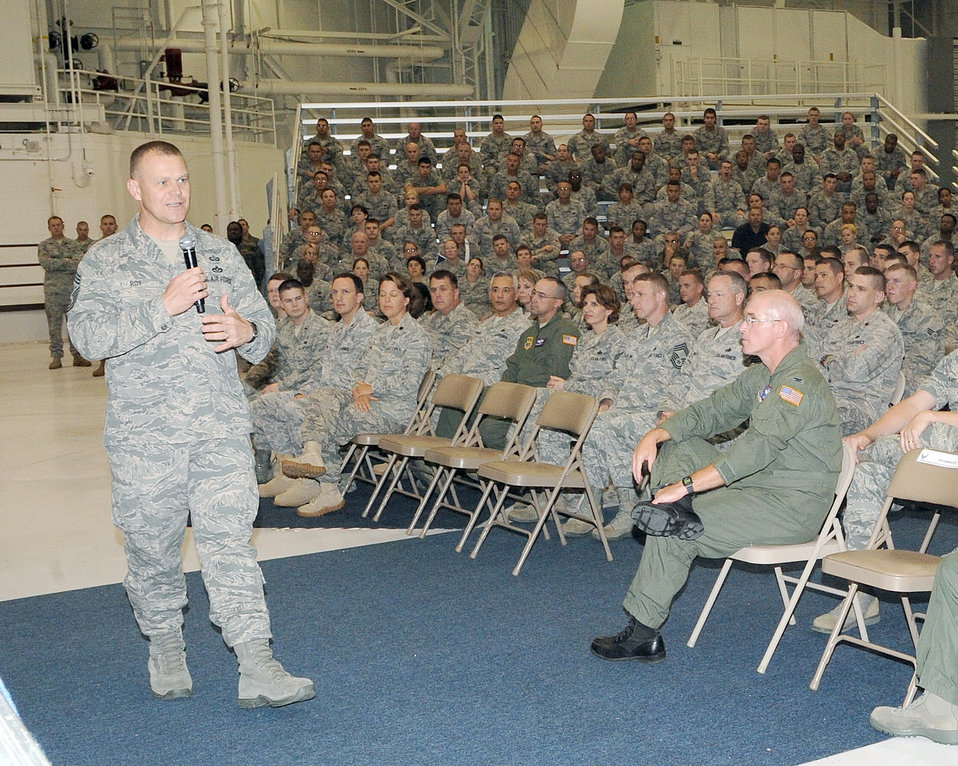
Chief master sergeant of the Air Force visits Grand Forks AFB

Chief Master Sgt. of the Air Force James A. Roy addresses Airmen from the 319th Air Refueling Wing during an All-Call July 15, 2010 at Grand Forks Air Force Base, N.D.